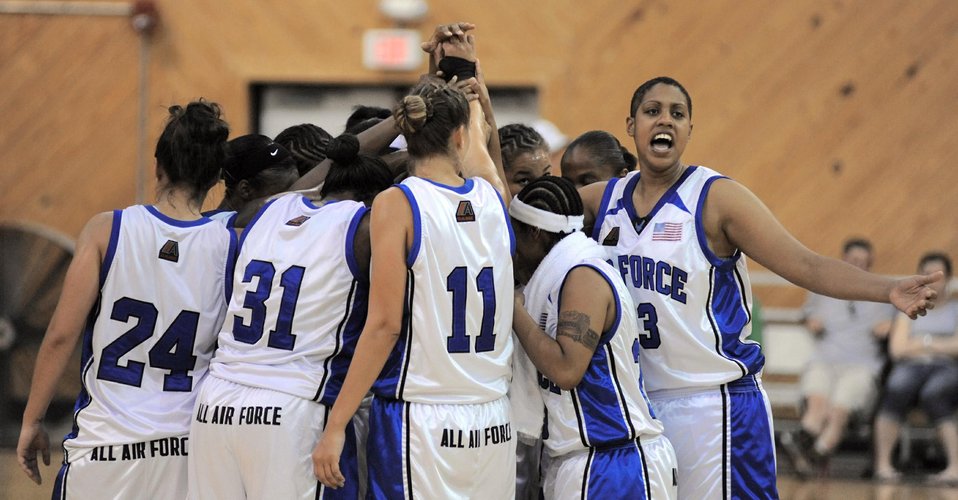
Armed Forces Basketball Championship

The Air Force women celebrate their victory after beating the Army 78-59 during the fourth day of games for the Armed Forces Basketball Championship. The team ended up taking the silver medal after being edged by the Navy team. The tournament ran from May 12 to 17 at the Naval Support Activity Mid-South in Millington, Tenn.